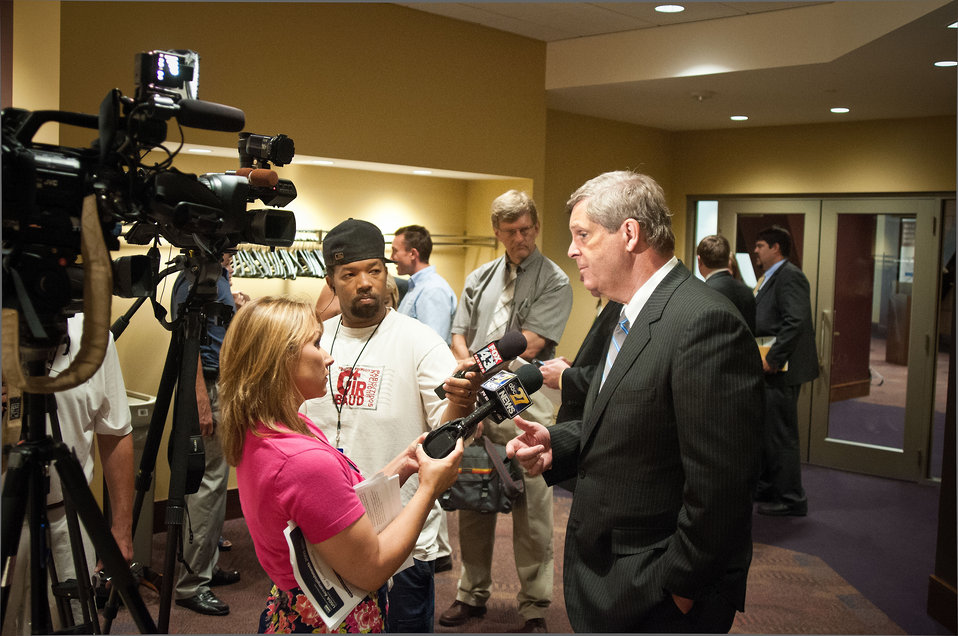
Agriculture Secretary Tom Vilsack spoke to the media after his Investments in Rural Pennsylvania speech about the U.S. Department of Agriculture's (USDA) Rural Development (RD) Rural Utilities Service (RUS) Proposed Energy Efficiency Rule at the Alleghany Electric Cooperative, Inc. Pennsylvania Rural Electric Association in Harrisburg, PA on Tuesday, July 17, 2012.